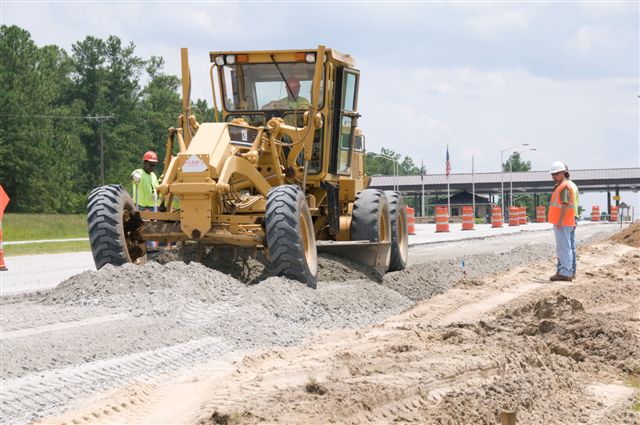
Savannah River road work